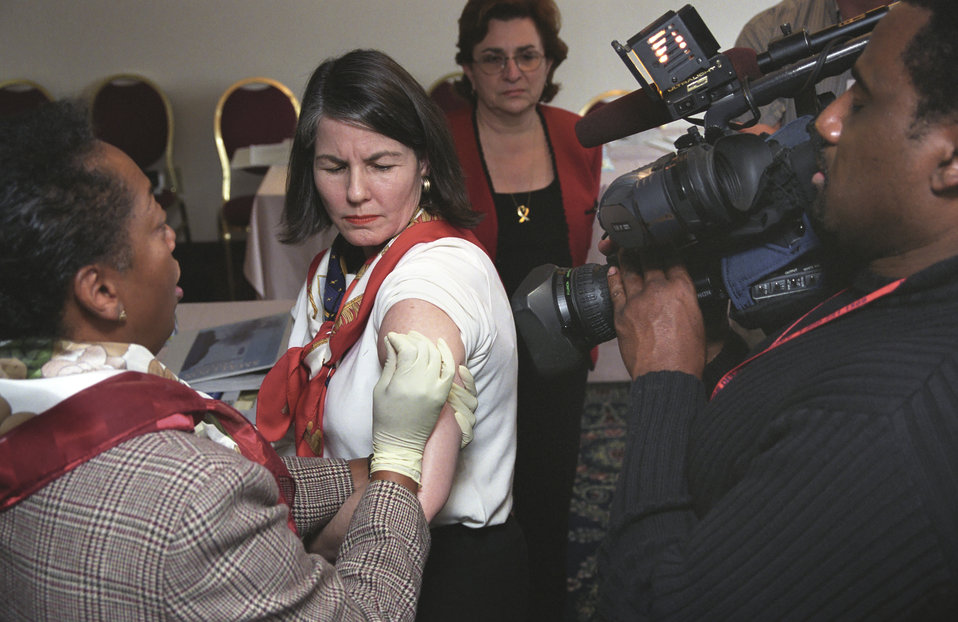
CDC Clinician, Gloria Brynam, RN, (Left), demonstrates proper vaccine application on CDC clinician, Melanie King, RN.